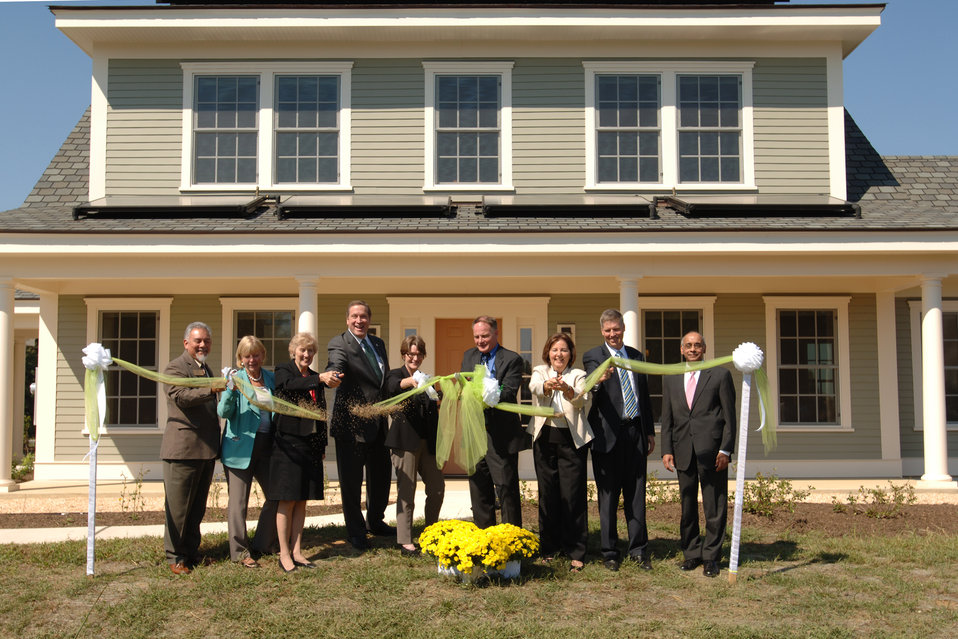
Net-Zero Ribbon Cutting Ceremony

Gaithersburg City Council Member Michael Sesma (far left), Montgomery County Council Member Nancy Floreen ( 2nd from left) and Maryland State Senator Jennie Forehand (3rd from left) , join NIST Director Pat Gallagher (2nd from right), NIST Engineering Laboratory Director Shyam Sunder (far right), NIST Director of the Office of Facilities and Property Management Stella Fiotes (3rd from right), Chief of the Energy and Environment Division of the NIST Engineering Laboratory Hunter Fanney (4th from right), and invited dignitaries at the ribbon cutting for the NIST Net Zero Energy Residential Test Facility.